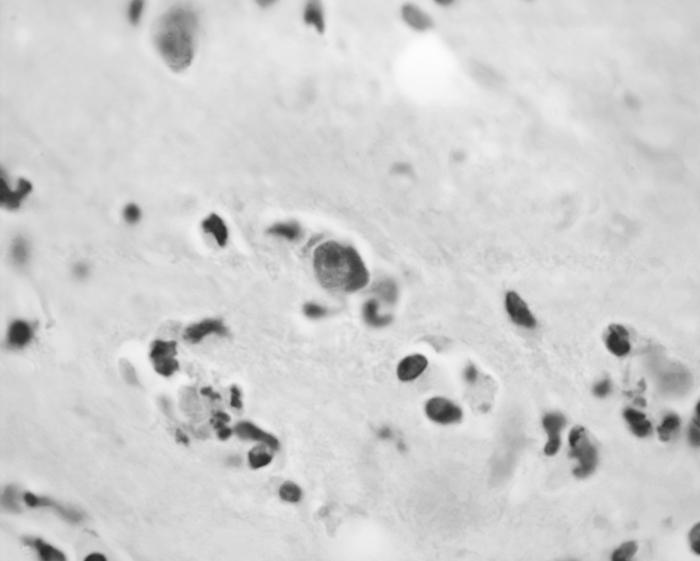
Magnified 1200X, this 1973 photomicrograph depicted a mouse brain tissue specimen stained using the hematoxylin and eosin (H&E) staining technique, and revealing the presence of Acanthamoeba polyphaga protozoa.Acanthamoeba is a microscopic, free-living ameba commonly found in the environment that can cause rare but severe illness. Acanthamoeba causes three main types of illness involving the eye (keratitis), the brain and spinal cord (Granulomatous Amebic Encephalitis), and infections that can spread from an entry point to the entire body (disseminated disease).